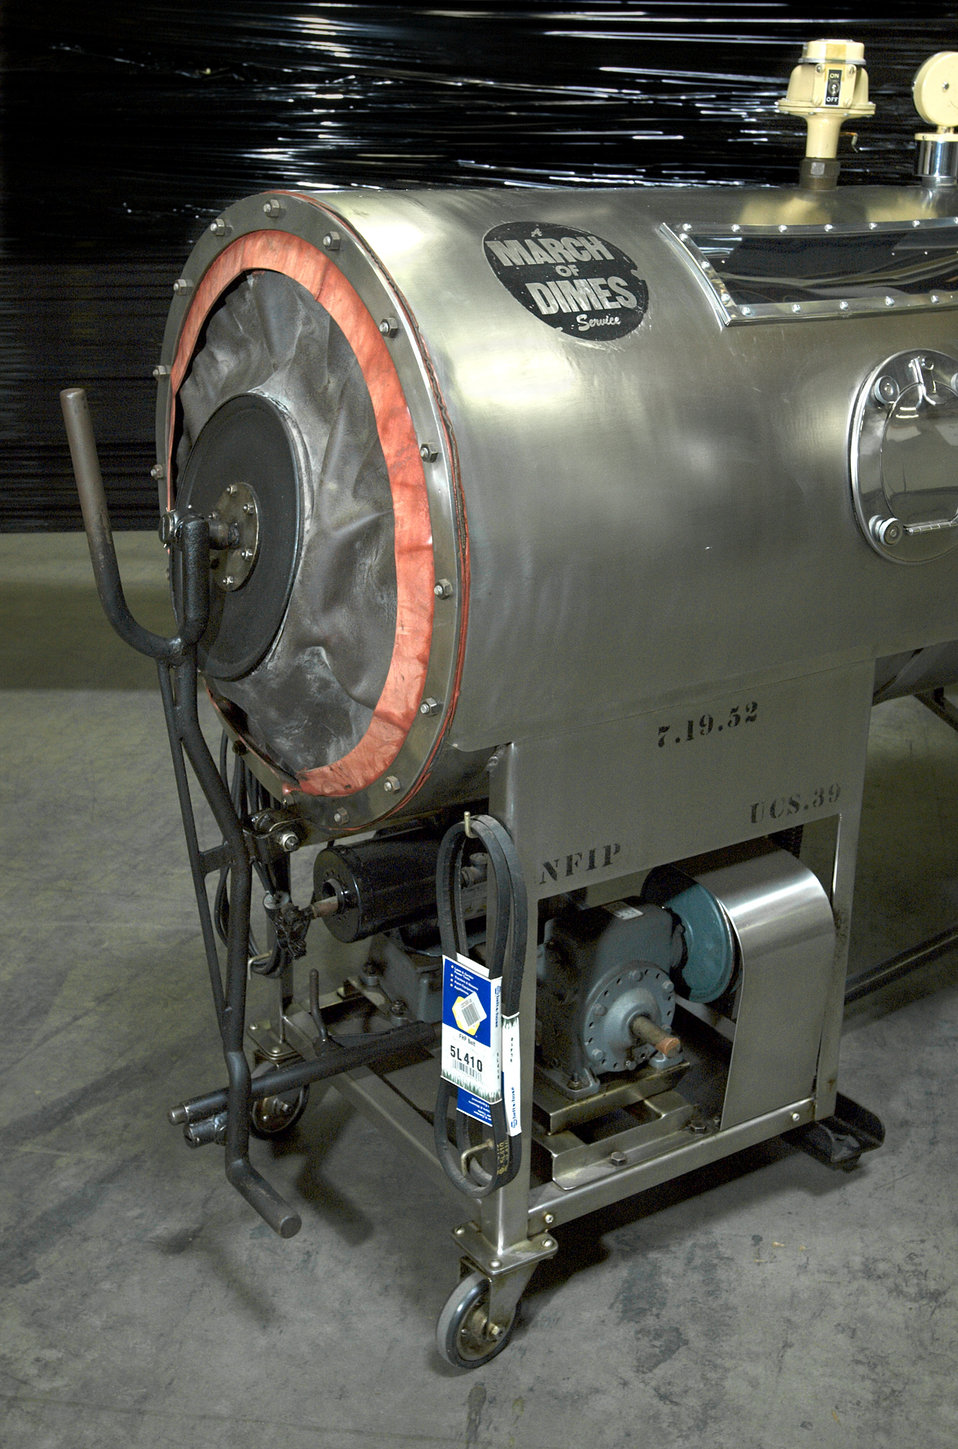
This photograph shows the March of Dimes insignia placed on the rear of an iron lung. This artificial respirator saved coundless lives during the polio epidemic.